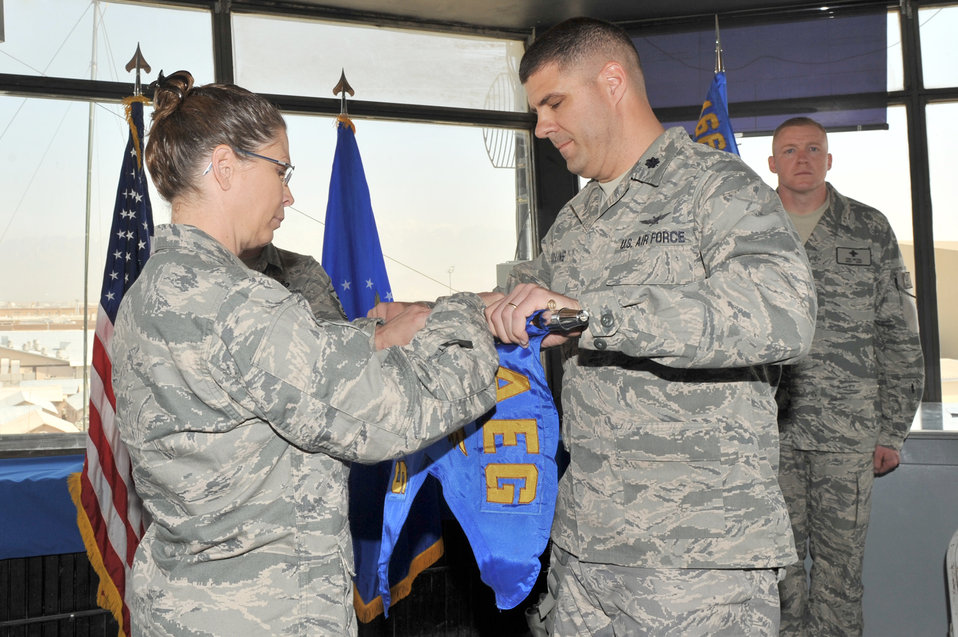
766th AES deactivates, marks change for JET Airmen

Col. Lesa Toler, 466th Air Expeditionary Group commander, and Lt. Col. Jeffrey Collins, 766th Air Expeditionary Squadron commander, rolls the guidon as Lt. Col. Collins relinquishes command during the 766th AES inactivation ceremony at Bagram Airfield, Afghanistan, March 23, 2011. Colonel Collins will assume command of the 966th Air Expeditionary Squadron.